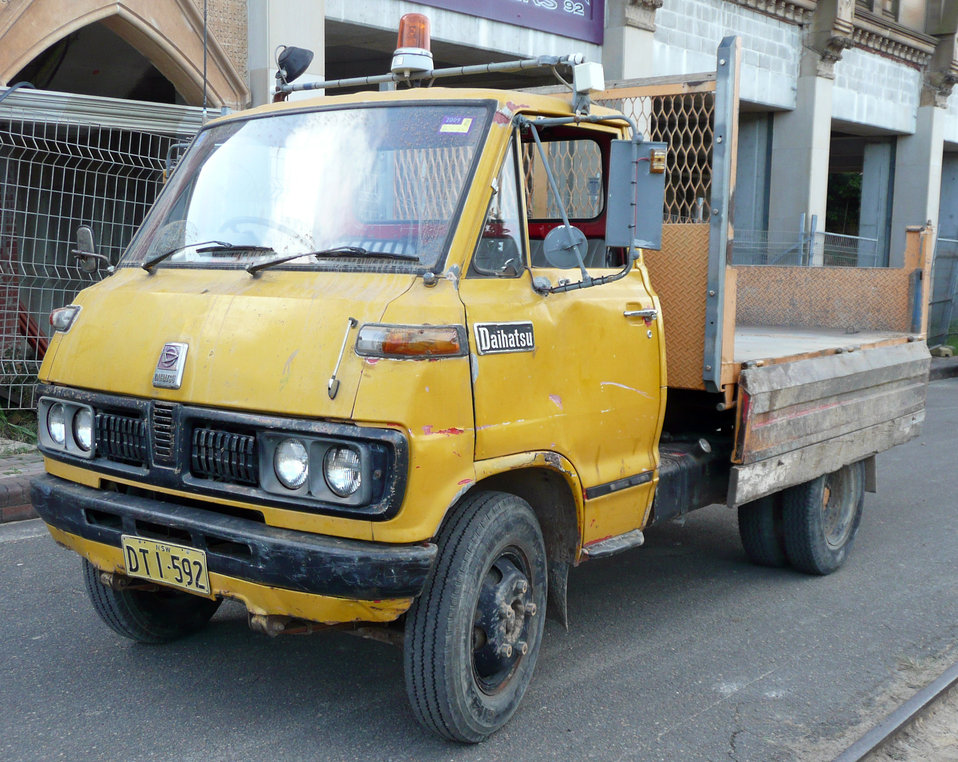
1971 Daihatsu Delta (DV26) 2000 cab chassis, photographed at Loftus, New South Wales, Australia.